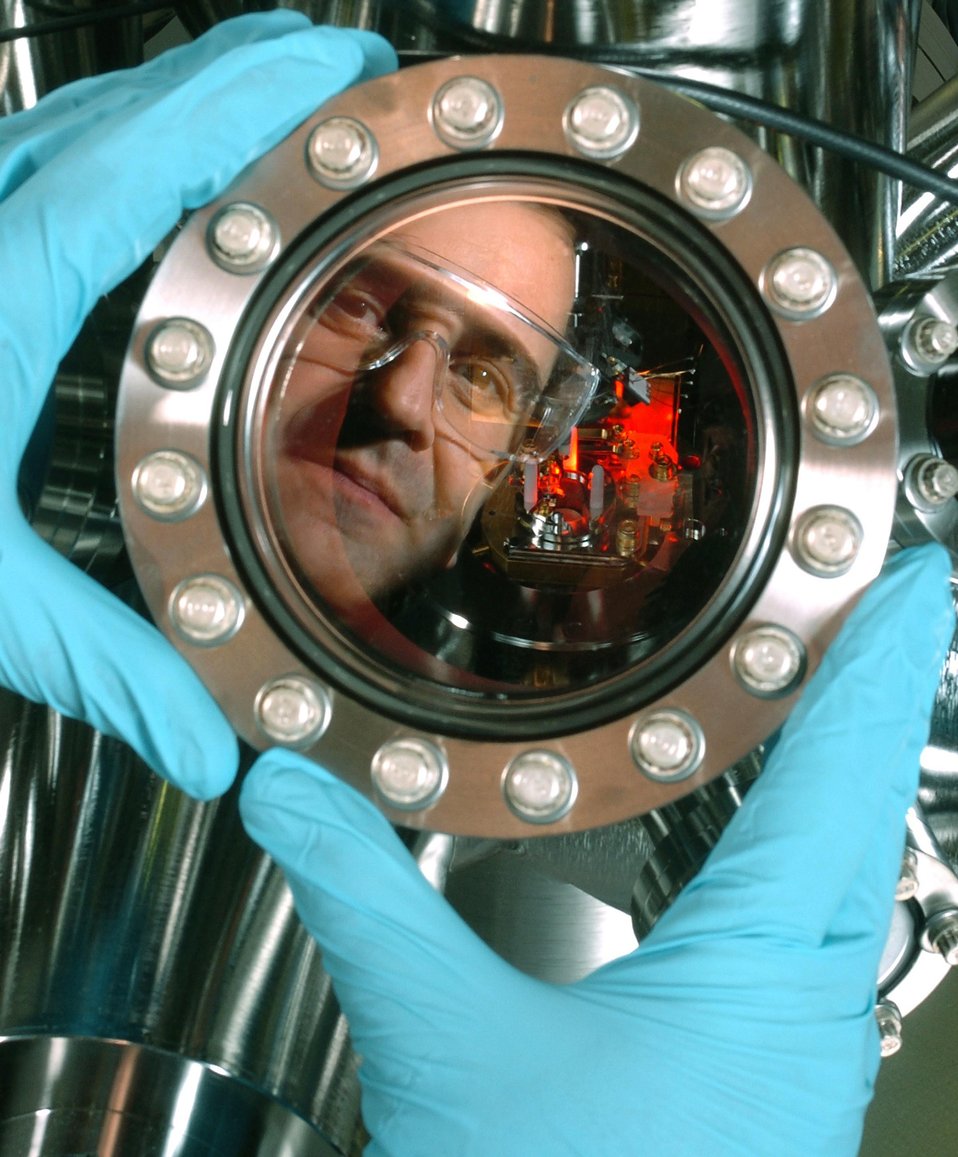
ARGONNE SCIENTIST PREPARES A SCANNING TUNNELING MICROSCOPE.

THE SCANNING TUNNELING MICROSCOPE CAN DETERMINE THE SURFACE STRUCTURE OF A SAMPLE AT THE ATOMIC SCALE, LEADING TO NEW DISCOVERIES ABOUT THE INTERACTION OF MAGNETIC FIELDS AND HIGH-TEMPERATURE SUPERCONDUCTORS. THE MAGNETIC FIELDS CAN REDUCE THE AMOUT OF CURRENT A SUPERCONDUCTING MATERIAL CAN CARRY. THE FIELDS CREATE SWIRLING TUBES OF ELECTRICAL CURRENT, CALLED VORTICES, IN THE SUPERCONDUCTING MATERIALS. USES OF THE MICROSCOPE ARE: NEW SUPERCONDUCTOR DESIGNS FOR TRANSMITTING DC AND AC ELECTRIC POWER, RF FILTERS FOR MOBILE TELEPHONE NETWORK, MAGNETIC RESONANCE IMAGING (MRI) MACHINE AND PARTICLE ACCELERATORS.